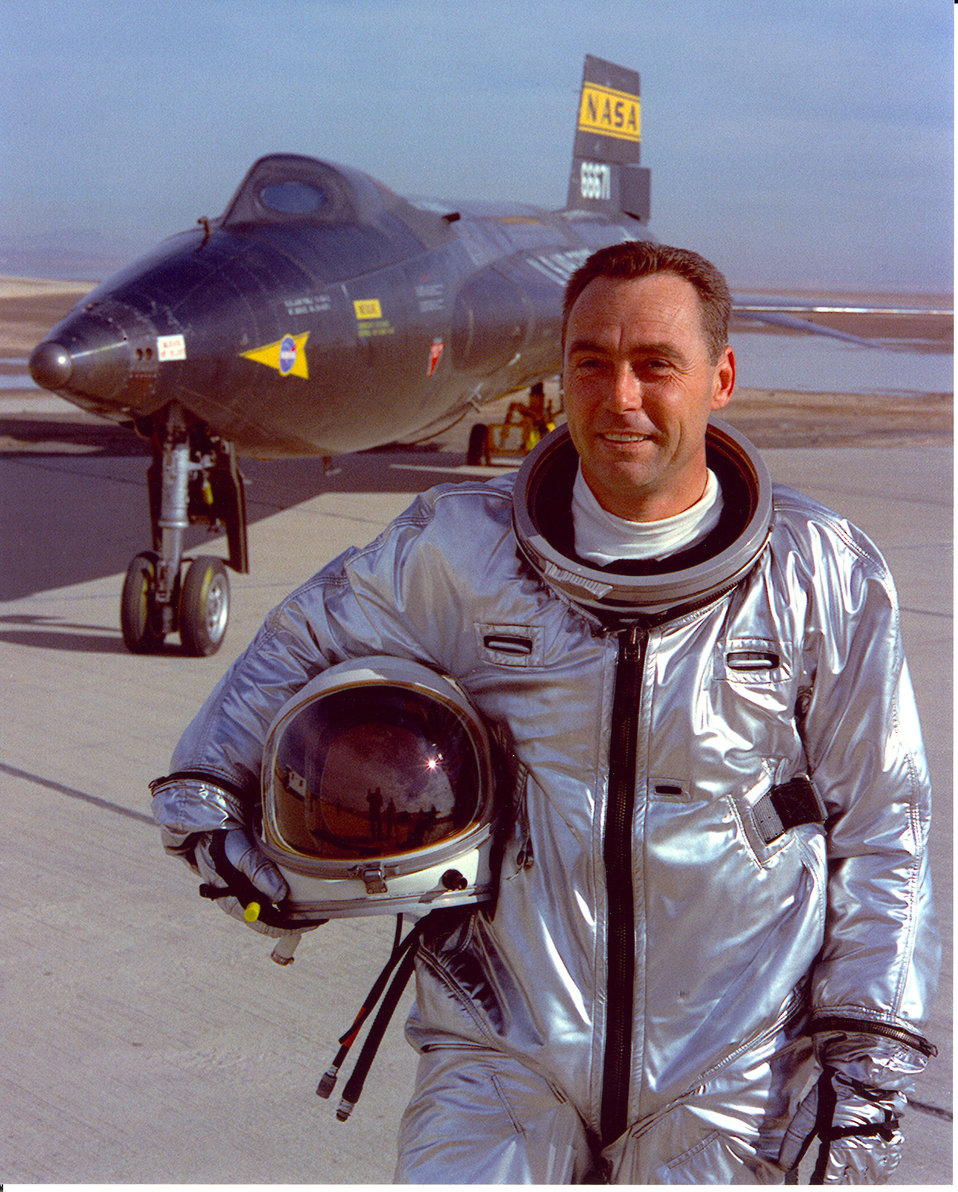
Maj. William

On Oct. 3, 1967, Maj. William